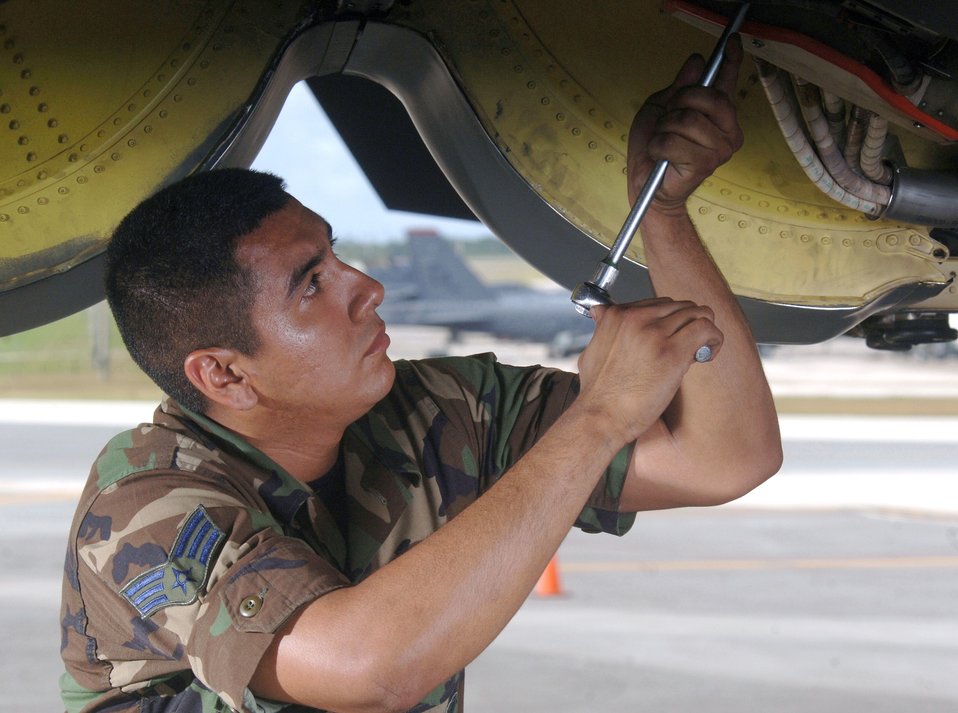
Strato work

ANDERSEN AIR FORCE BASE, Guam (AFPN) -- Senior Airman Raymond Gomez changes the anti-ice valve on a B-52 Stratofortress aircraft engine. Airman Gomez is a jet engine mechanic with the 2nd Maintenance Squadron at Barksdale Air Force Base, La.